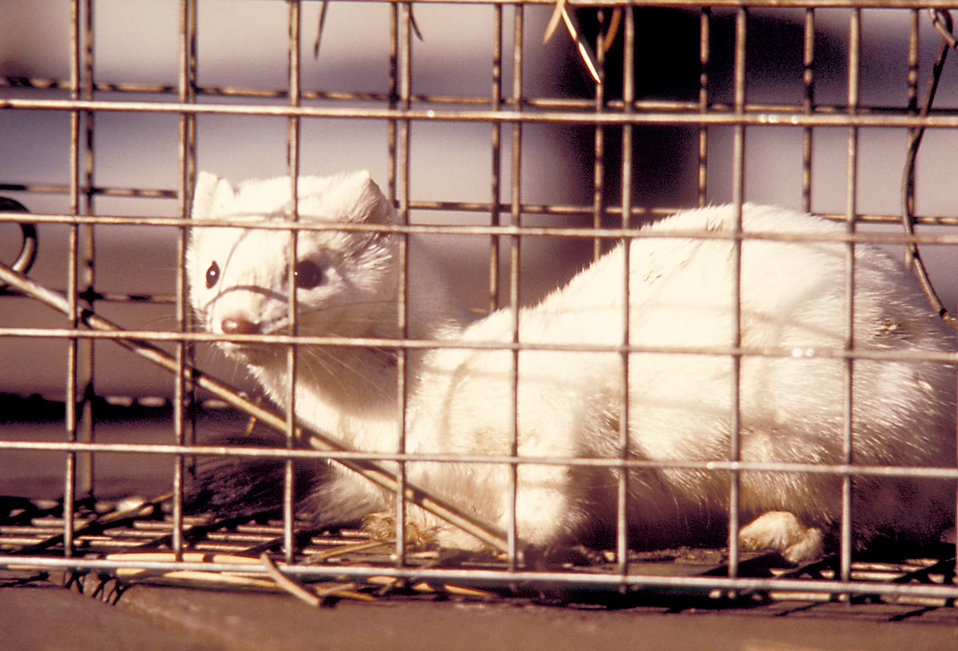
The Long-tailed Weasel, Mustela frenata, here seen in its winter pelage, is a carrier of plague vectors.